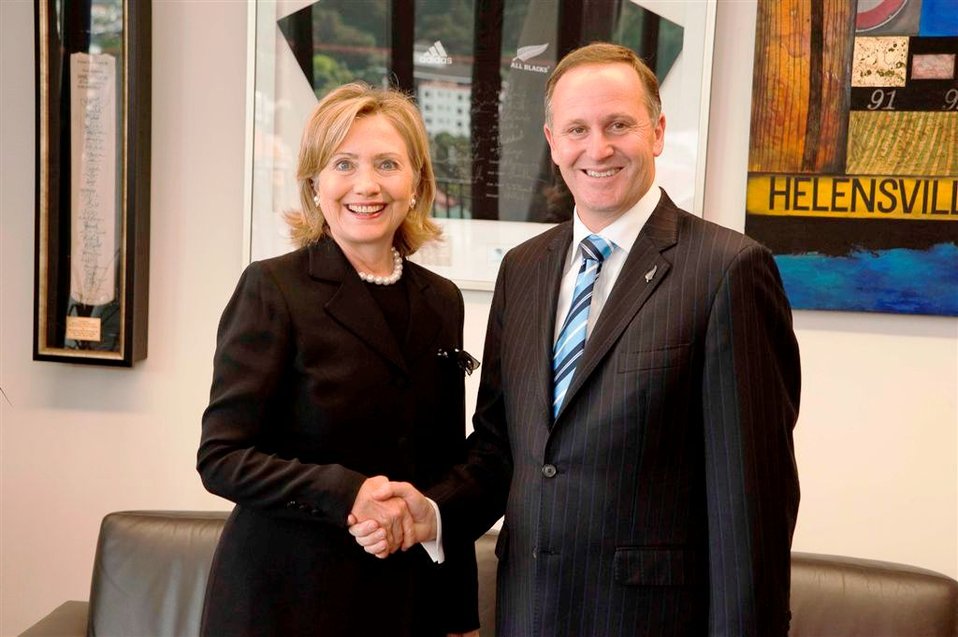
Secretary Clinton Shakes Hands With New Zealand Prime Minister Key

U.S. Secretary of State Hillary Rodham Clinton shakes hands with New Zealand Prime Minister John Key in the Prime Minister's office in Wellington, New Zealand, on November 4, 2010.